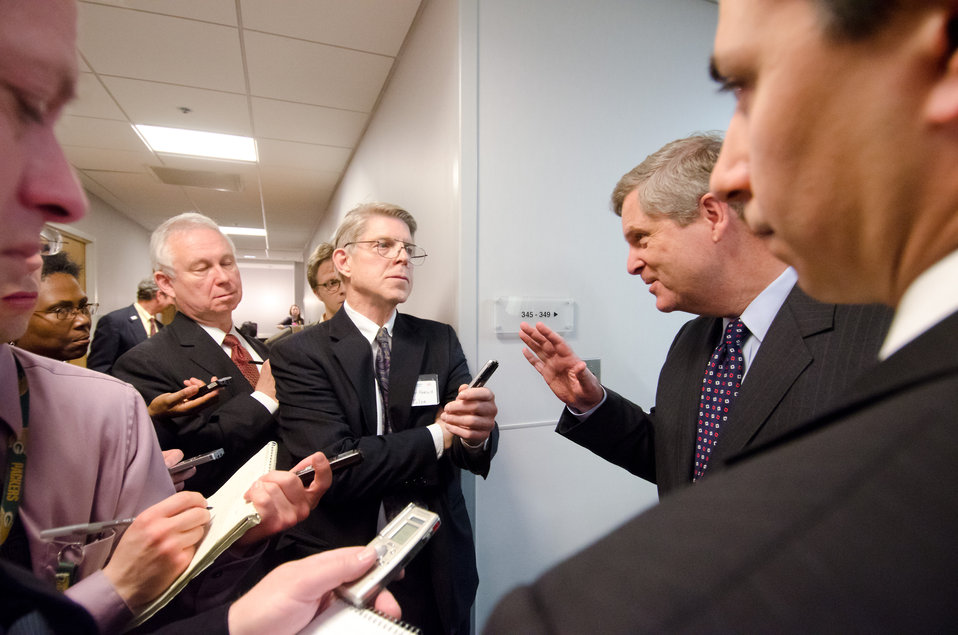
U.S. Department of Agriculture Secretary Tom Vilsack would not be talked into making contradictory statements about his planned method of announcing the effects of the budget, if it is not passed, during an impromptu press conference in a hallway after he spoke at the Organic Trade Association’s 2011 Policy Conference and Capitol Hill Visit Days on Wednesday, April 6, 2011, at the Hall of States in Washington, DC. With the budget decision still to be made, reporters had many questions for Secretary Vilsack about how he would announce decisions, his response was that all will be informed at the same time.